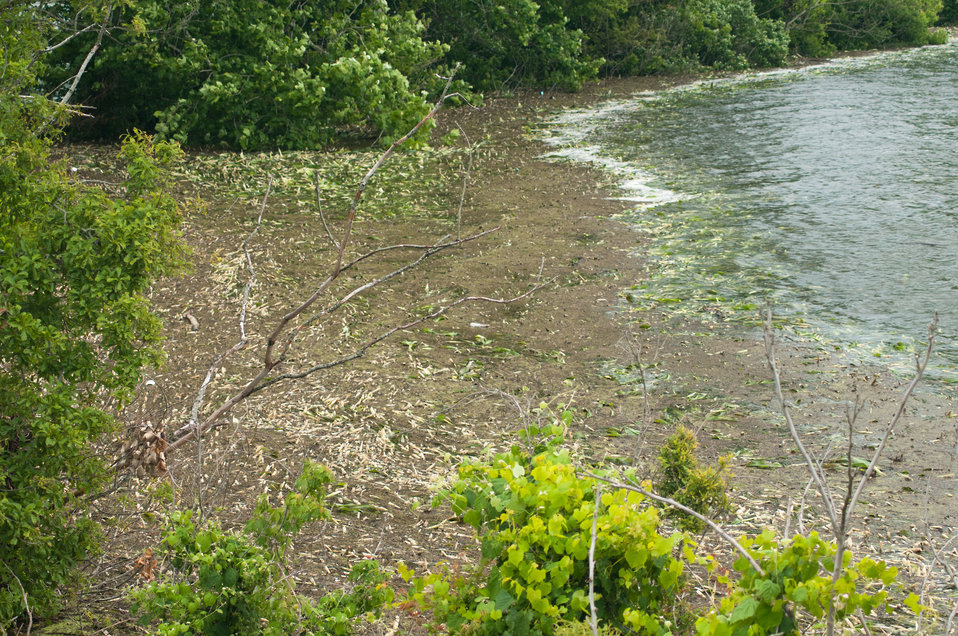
Corn stalks and leaves from wheat collect along a newly formed shoreline in Satartia, MS, on Monday, May 16. 2011. A local community of 96 was evacuated and approximately 4,000 acres was flooded. Wave action and decay has freed parts of corn stalks collecting along the new shoreline. The water saturated soil does not allow enough oxygen to the plant, by the time the water is expected to recede, the stalks will be dead. The wheat was harvested earlier two weeks earlier than scheduled from wet fields and will have to be dried before being used or sold. New media crews come and go throughout the day reporting from this bridge and roadway.